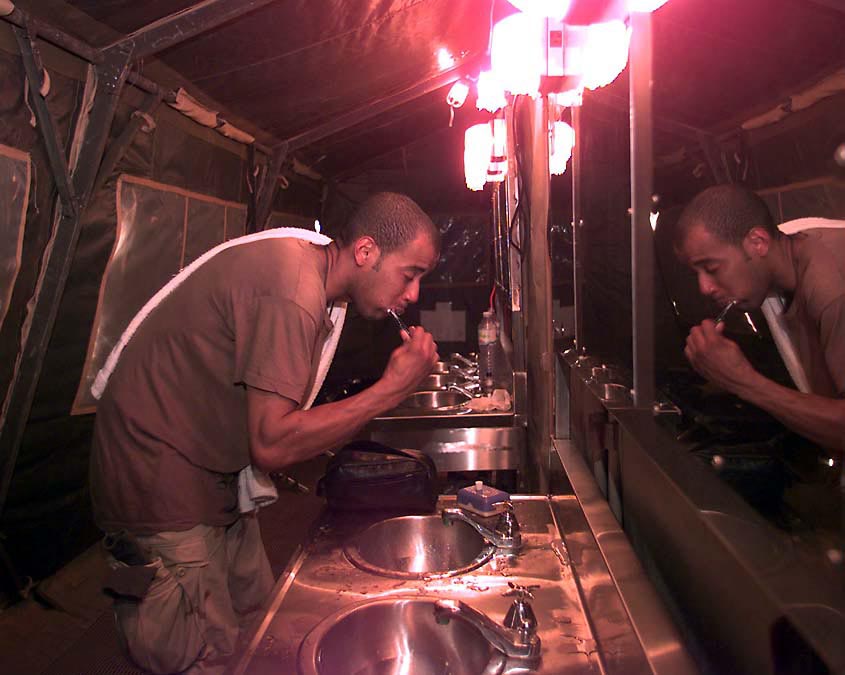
Brush, brush, brush

OPERATION SOUTHERN WATCH -- Senior Airman Ernest Howell, air transportation specialist, 815th Air Mobility Squadron, Travis Air Force Base, Calif., brushes his teeth in a field shower facility. Howell is part of the 815th Tanker Airlift Control Element which has been coordinating all US airlift traffic in or out a location in Southwest Asia in support of Operation Southern Watch.